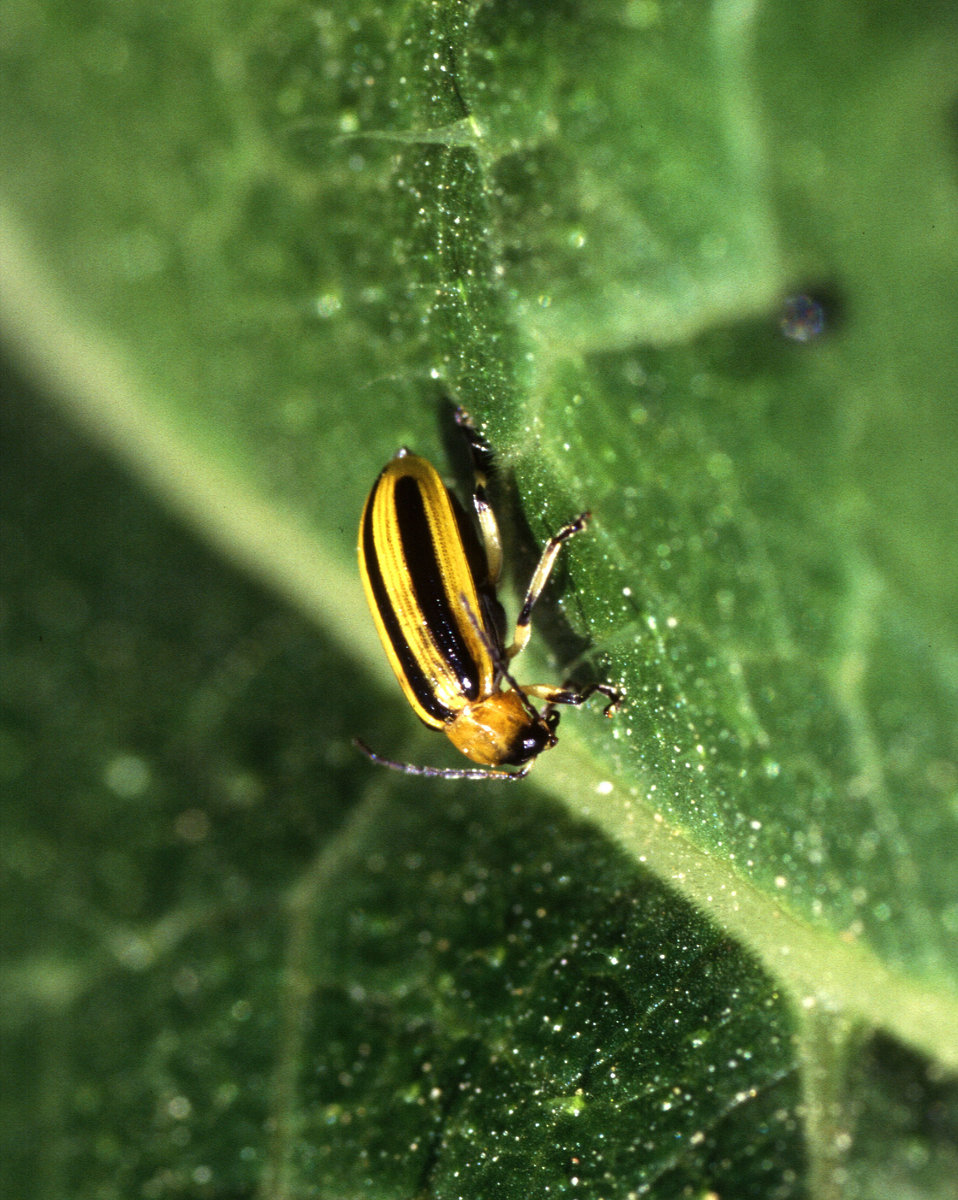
This striped cucumber beetle is sucking invader that harms crops and ornamental plants.